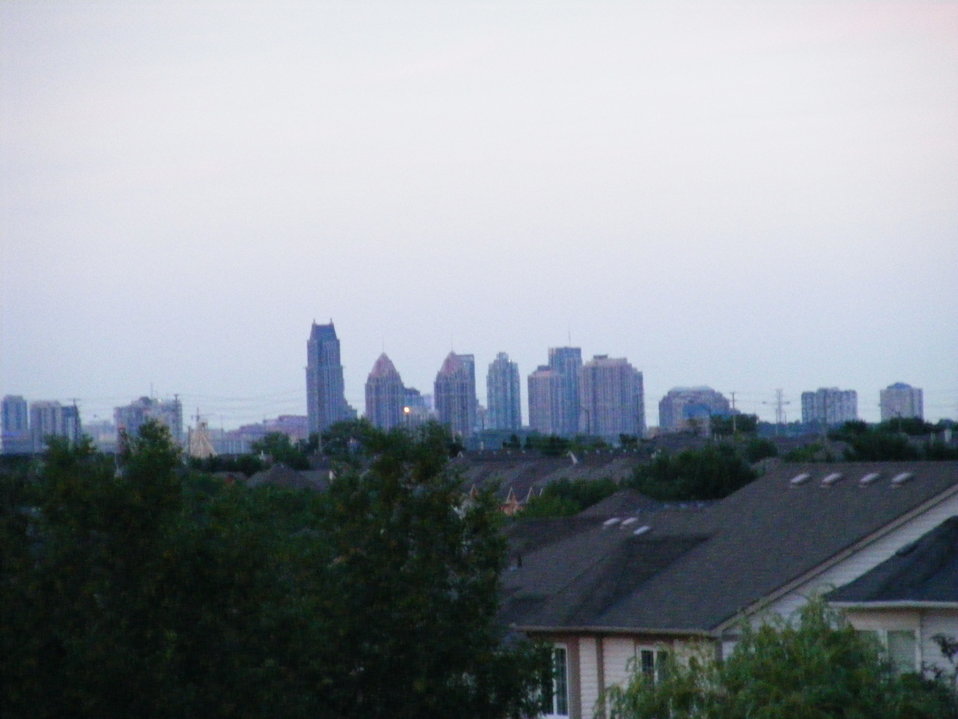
Downtown Mississauga skyline as photographed on Canada Day.